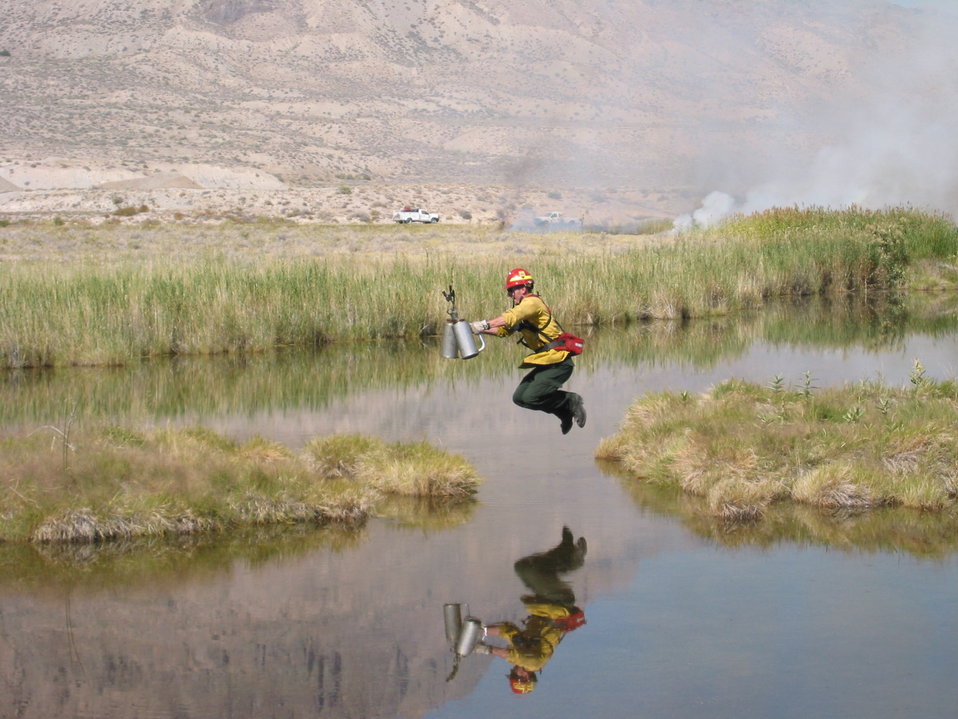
Whatever It Takes

Firefighters go to great lengths to get the job done! The Charles M. Russell NWR fire crew conducts a prescribed burn at Fish Springs NWR.